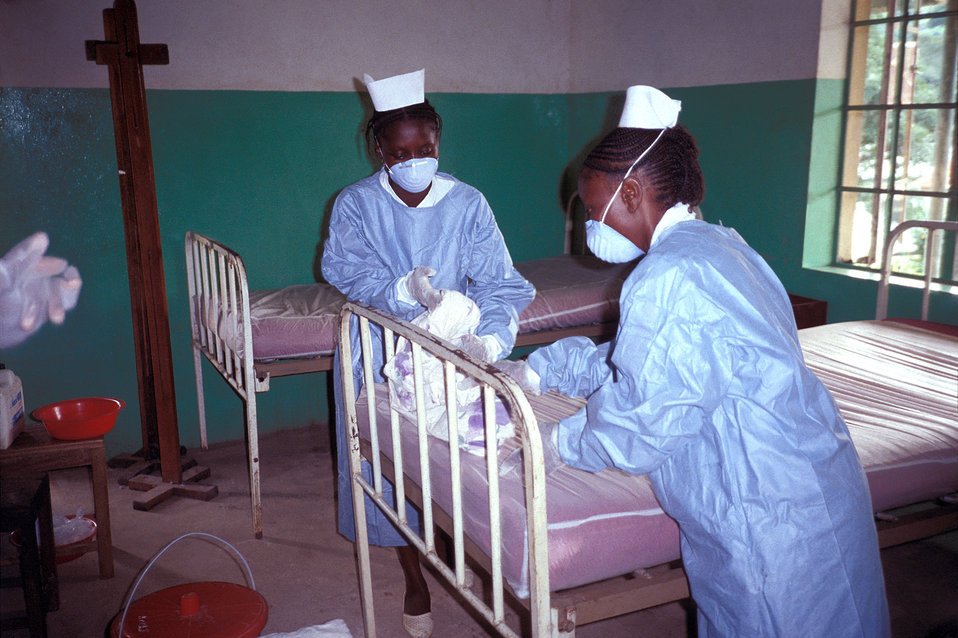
Two Zairian nurses wear protective clothing while changing the bedding in an Ebola VHF isolation ward, Kikwit, Zaire, 1995.